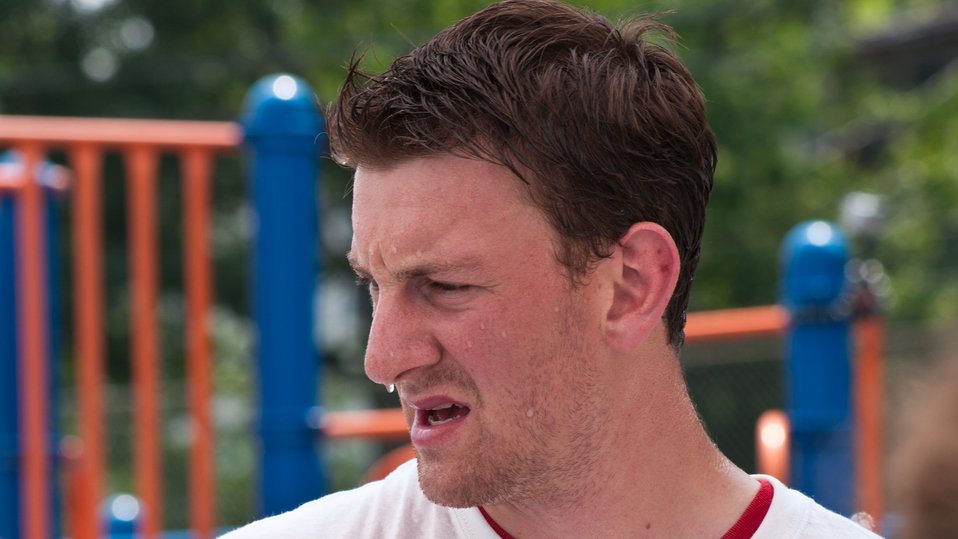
Washington Capitals defenseman Jeff Schultz was dripping sweat after a workout with a power tiller during the construction of a People’s Garden, at William B. Powell Elementary School, in Washington, DC, on Thursday, June 9, 2011. The professional hockey player did more than a celebrity appearance; he spent hours working with several project teams; gloves on; putting power and hand tools to their test. Volunteers from U.S. Department of Agriculture People’s Garden Executive Master Gardener program and Washington Capitals hockey organization, along with defenseman Jeff Schultz, and mascot Slapshot transformed a grassy corner of the school playground into a habitat garden and outdoor learning area. Executive Master Gardeners led the volunteer project teams. The Washington Capitals donated new tools; tool shed; garden materials; lunch; most of the volunteers and more. The completed projects included a walking path; tiling of garden plots; planting a bird habitat garden, pollinator garden and native grasses; caterpillar and butterfly plaques; hummingbird and bat house, and tool shed. The garden will later include a picnic area, outdoor classroom, hummingbird garden, Monarch watch garden, native bee garden, and birdbath. USDA challenges its employees to establish People's Gardens at USDA facilities worldwide or on this case, help communities create gardens. People's Gardens vary in size and type, but all have a common purpose - to help the community and the environment.